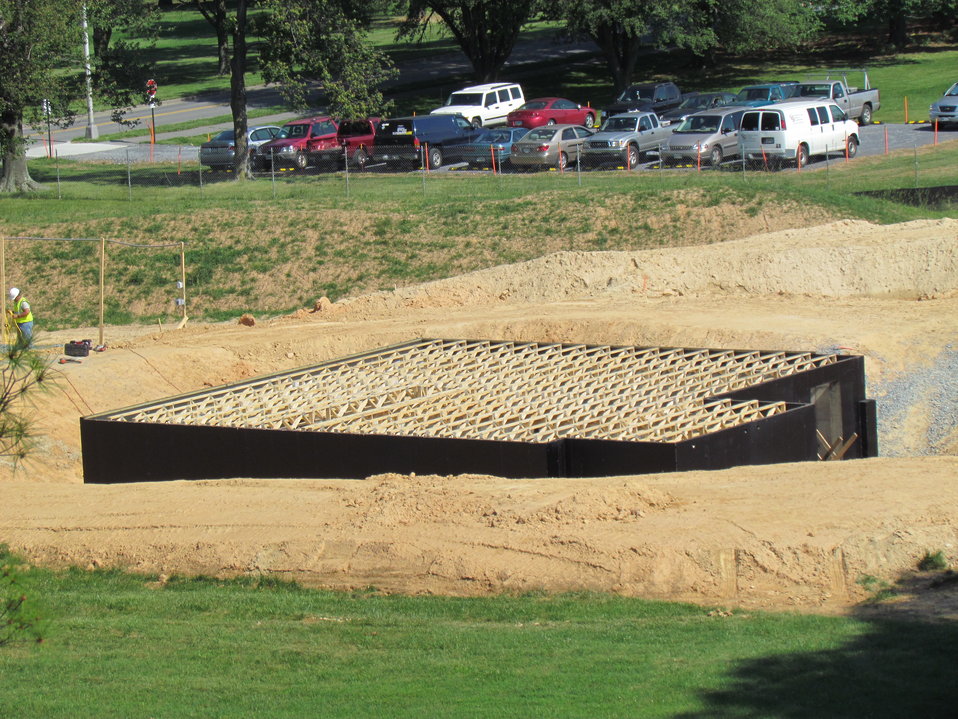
Net-Zero Energy Residential Test Facility - Aerial photo showing basement walls, waterproofing, and open web floor trusses.